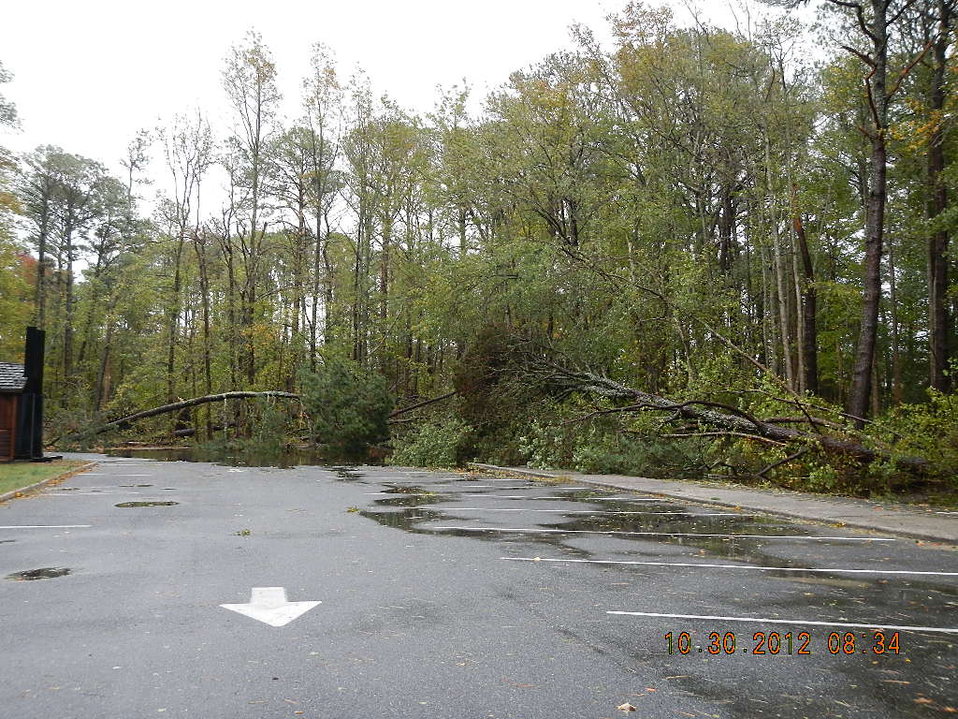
Hurricane Sandy hit Chincoteague National Wildlife Refuge (VA)

Heavy damage to Loop parking lot to bike trail.